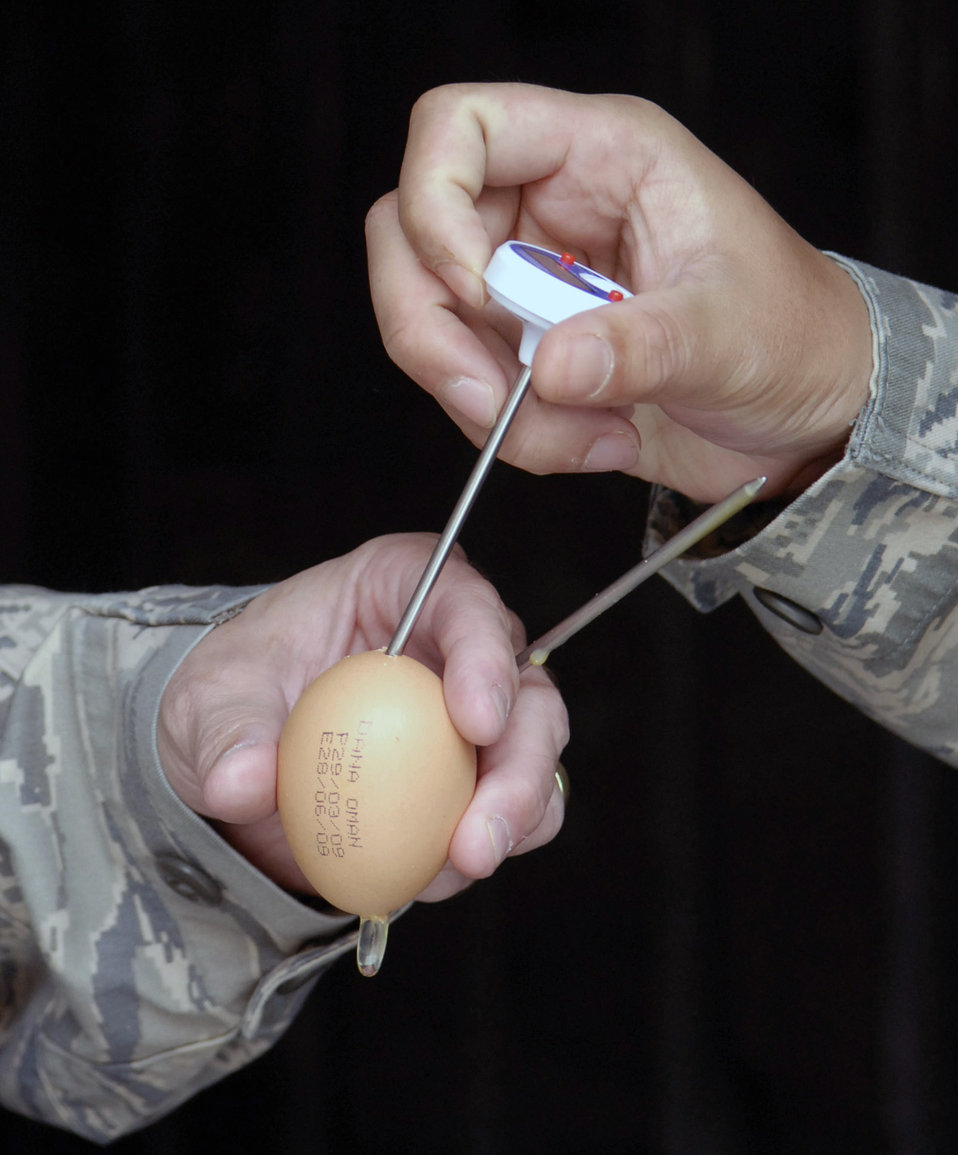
Public health maintains high standards, healthy force

Staff Sgt. Rommel Hernandez and Tech. Sgt. Duwayne Foster take the temperature of an egg to ensure it is properly refrigerated during their monthly dining facility inspection April 18 at an air base in Southwest Asia. The public health office inspects the dining facilities, checks personnel medical records, and provides medical intelligence for forward deployers. Sergeant Hernandez is a 379th Expeditionary Medical Group public health inspector and hails from Arlington, Va. Sergeant Foster is the 379th EMDG NCO in charge of public health and hails from Mobile, Ala. Both are deployed from Keesler Air Force Base, Miss.